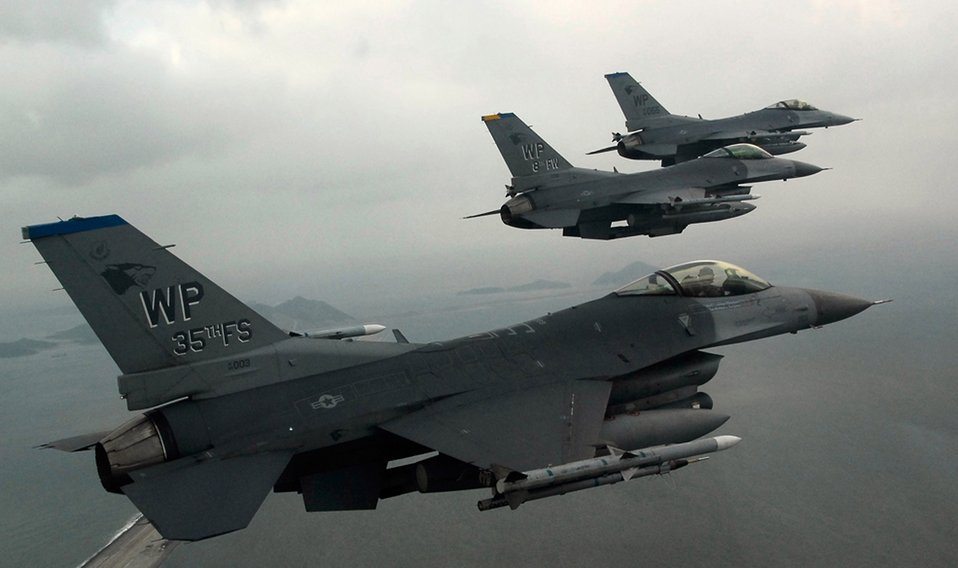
Falcons fly over South Korea

F-16 Fighting Falcons fly on a training mission Jan. 30 over the South Korean peninsula. Pilots assigned to the 35th Fighter Squadron from Kunsan Air Base, South Korea, use training missions to simulate actual conditions they may face in combat and keep their warfighting skills honed.